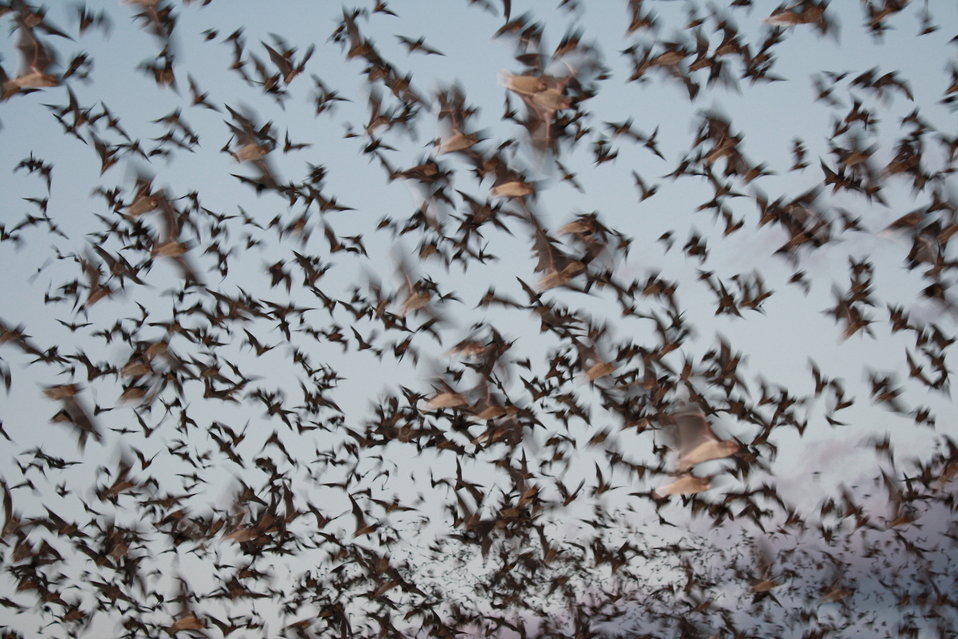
Mexican free-tailed bats exiting Bracken Bat Cave